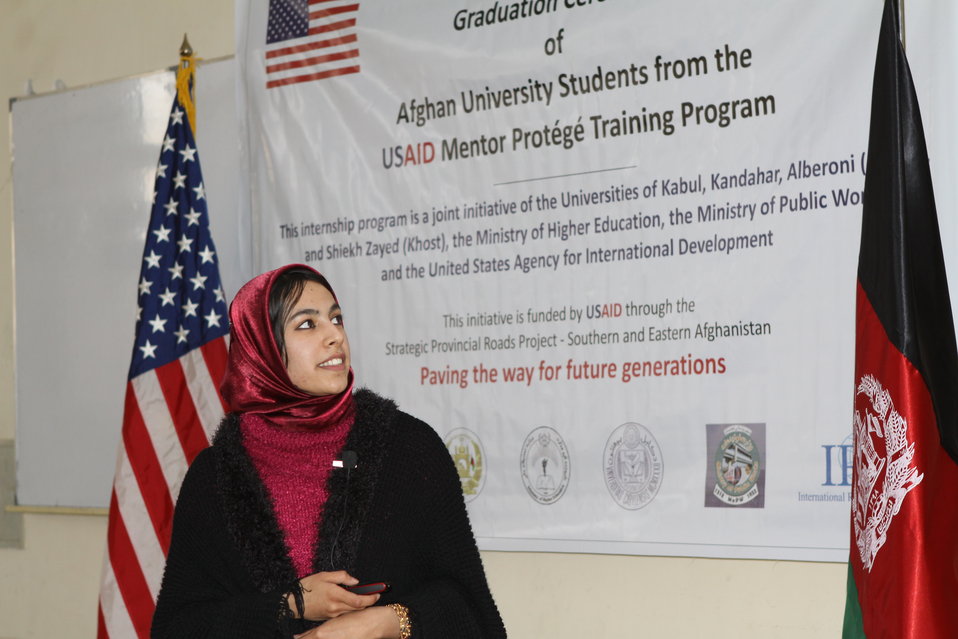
Female University Students Complete Internship

Kabul, Afghanistan | March 16, 2011 – In response to a demand for qualified Afghan engineers, Kabul University celebrated completion of an intensive five-month Mentor Protégé Training Program today by 10 female fourth year university students. The Training Program is a joint effort between the Government of the Islamic Republic of Afghanistan, the U.S. Agency for International Development (USAID), and the Universities of Kabul, Kandahar, Alberoony in Kapisa, Shiekh Zayed in Khost. The graduation ceremony highlighted collaboration with these national institutions in building the technical skills of young Afghans, made possible by USAID.

Four of the interns are engineers, while the remaining six are from the faculties of computer science, economics, and psychology.

Speaking about the event, H.E. Minister of Public Works Abdul Qudus Hamidi said, “The future of Afghanistan lies in developing the skills of our youth, and the engineering skills of these graduates today represent a small but important step forward for the country.”

Keynote speakers at the ceremony included H.E. Deputy Minister of Higher Education Abdul Rahim; USAID Senior Deputy Mission Director Robert Hellyer; and Chancellor of Kabul University Professor Hamidullah Amin. Approximately 150 people, including current and former students attended the graduation.

Launched last year, the Mentor Protégé Training Program has provided qualifying students the opportunity to intern with USAID’s Strategic Provincial Roads-South and East Afghanistan project and gain practical experience in a real work environment. The goal of the program was to offer interns the opportunity to gain hands-on experience to reinforce their formal studies. A total of 30 students from four national universities have benefitted from this program.

“The promotion of women’s rights is integrated into the overall U.S. Government development strategy and can be found in key programs, including education, healthcare, security, rule of law, political participation, agriculture, and economic development,” said Robert Hellyer. “The U.S. Government is committed to the Afghan leadership of programs that directly enhance development, particularly as it relates to women’s issues.”

This event also highlighted the learning achievements of students and emphasized the importance of hands-on internship programs. The curriculum is designed to instill students with the knowledge and confidence to qualify for engineering positions upon completion of their fourth year at their respective universities.